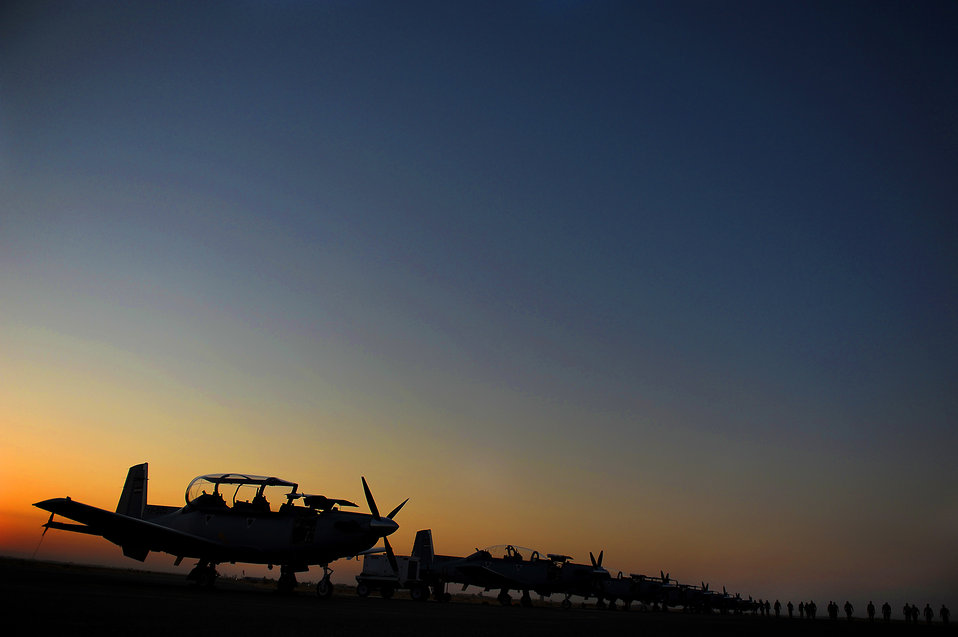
Dawn's early light

Air Force advisers, maintenance contractors and Iraqi airmen conduct a foreign object debris walk in front of a line of T-6 Texan IIs Sept. 4, 2011, at Camp Speicher, Iraq.